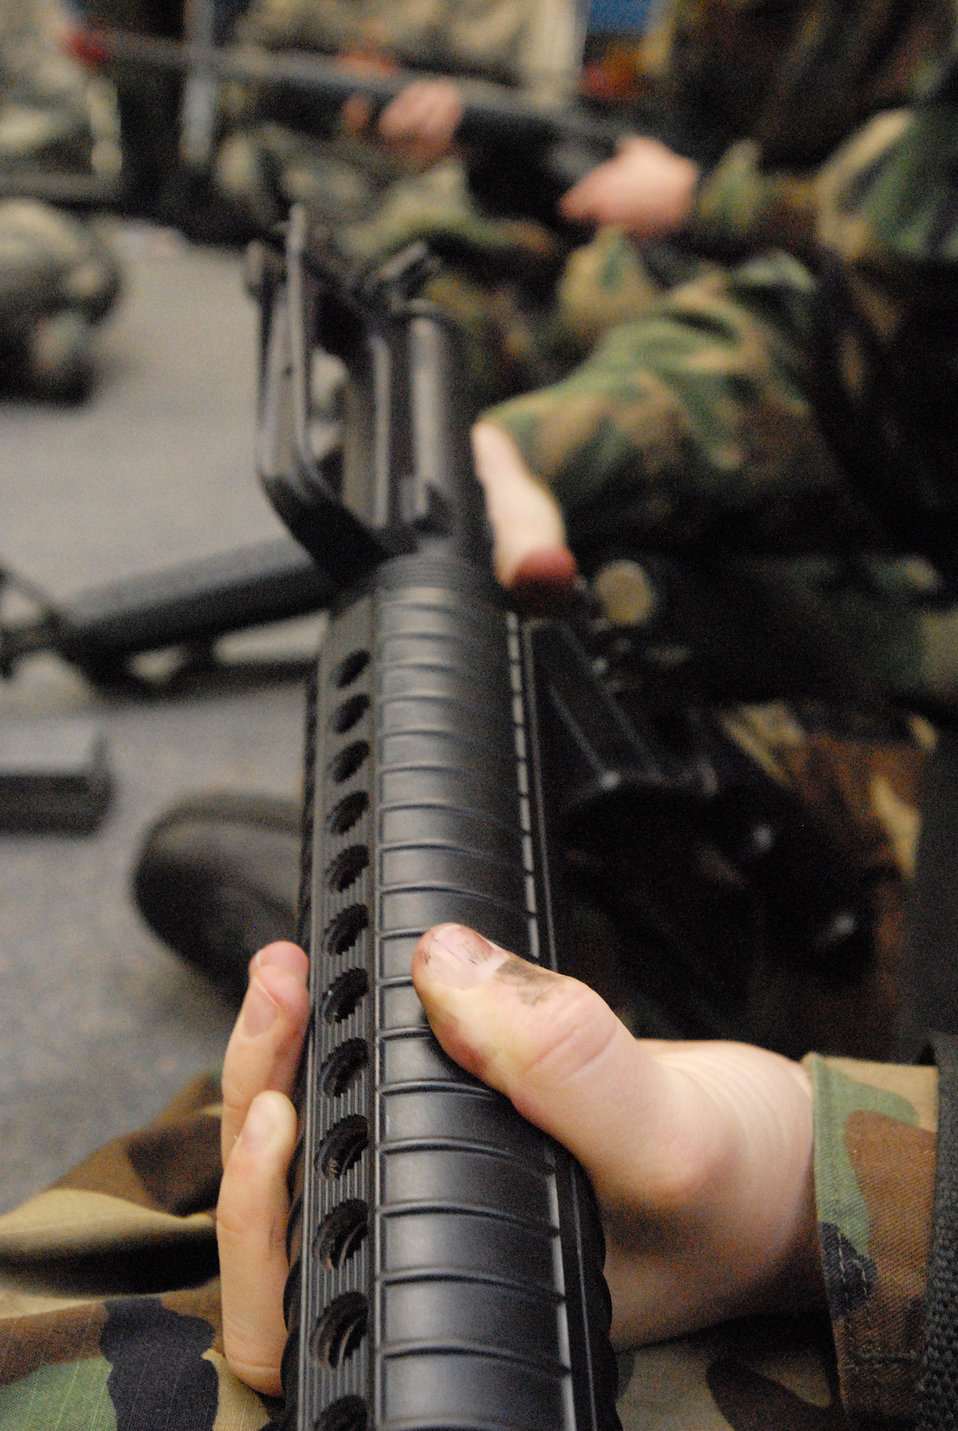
Ker-chunk!

An Air Force ROTC cadet reassembles an M-16A2 during a weapons familiarization class at Goodfellow Air Force Base, Texas, March 6, 2010. The 17th Training Wing hosted cadets from Detachment 847 at Angelo State University in San Angelo, Texas, for two days during which cadets participated in class room instruction, field training and a deployment exercise.